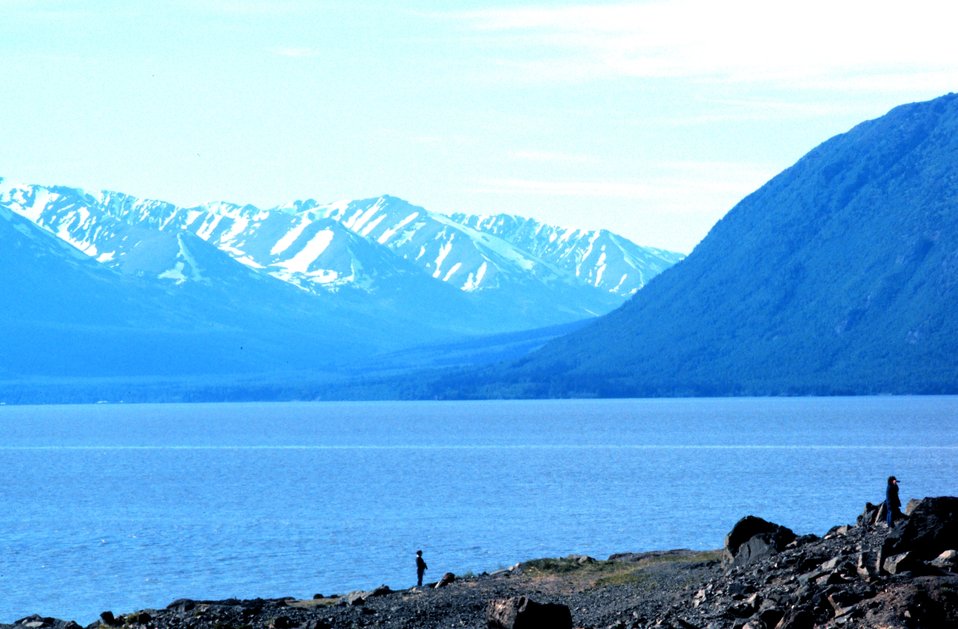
Coastal scene near Seward